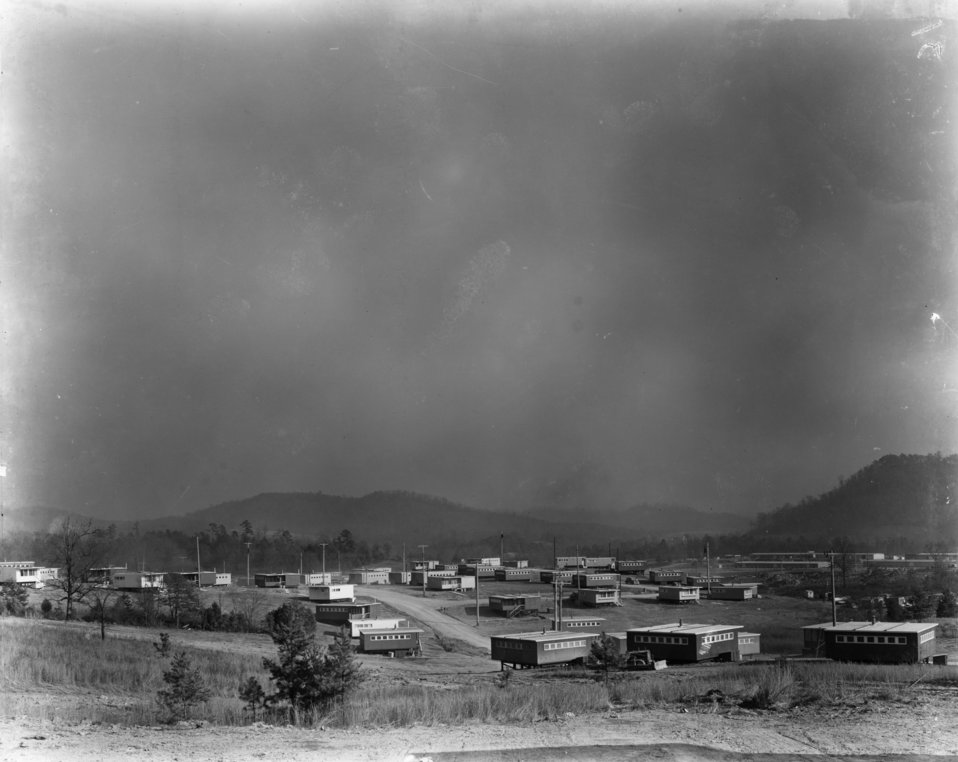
Housing at Oak Ridge